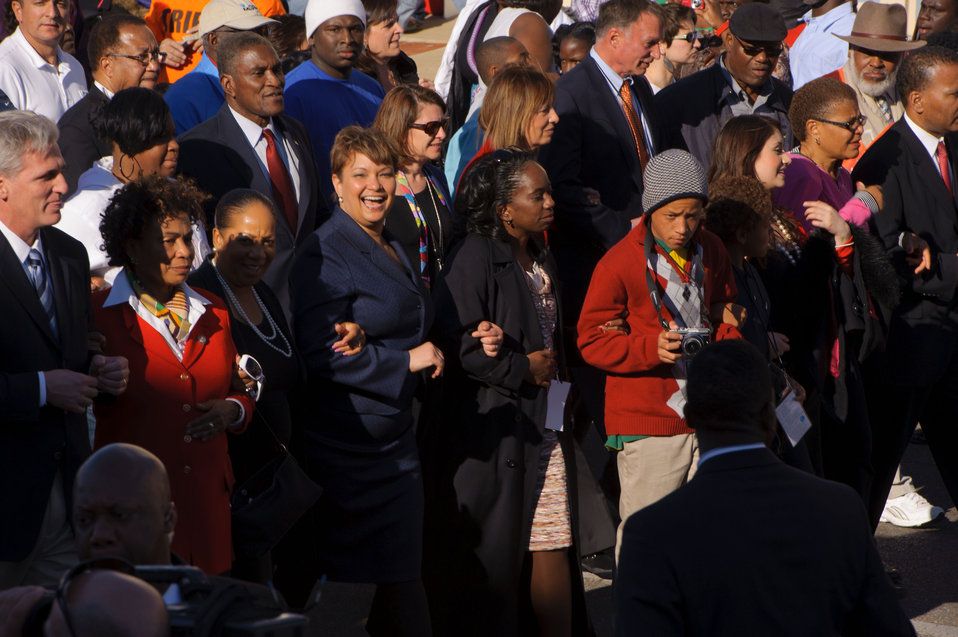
March 4, 2012 Administrator Lisa P. Jackson joins community leaders on historic walk across Edmund Pettus Bridge in Selma, Alabama

While in Selma, Alabama, Administrator Jackson visited the Voting Rights Museum and participated in this re-enactment of a nearly 2-mile march that took place in 1965 from Brown Chapel AME Church across the Edmund Pettus Bridge.

These events were all part of the 12th Congressional Civil Rights Pilgrimage that took place from March 2-4. The celebrations included more than 20 Members of Congress, Civil Rights luminaries and noted scholars and leaders.